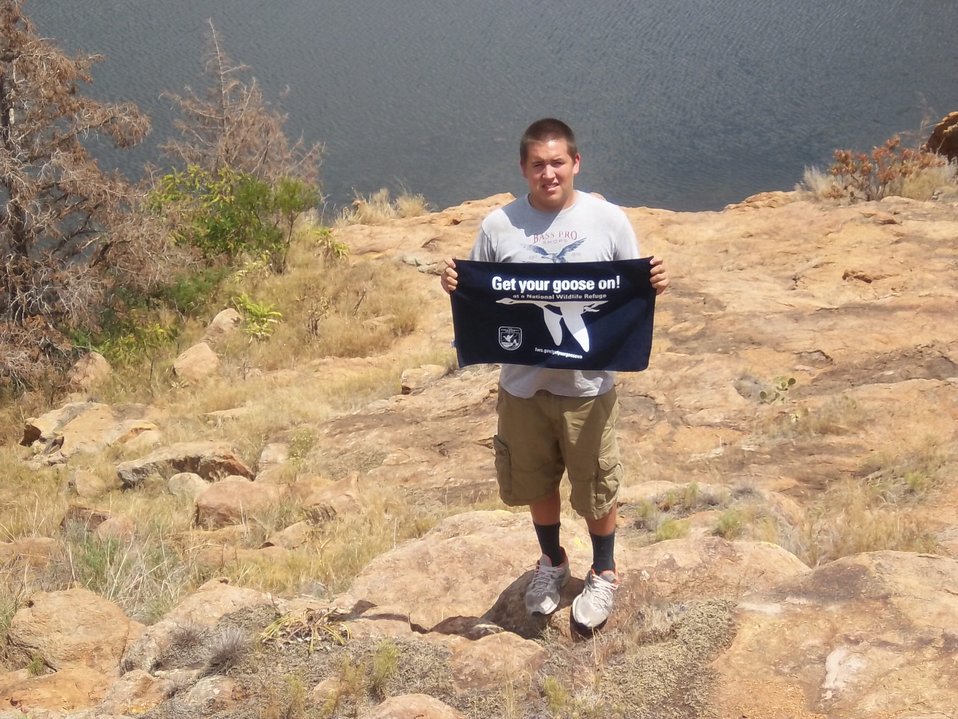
Get Your Goose On!

Wichita Mountains National Wildlife Refuge in Oklahoma.